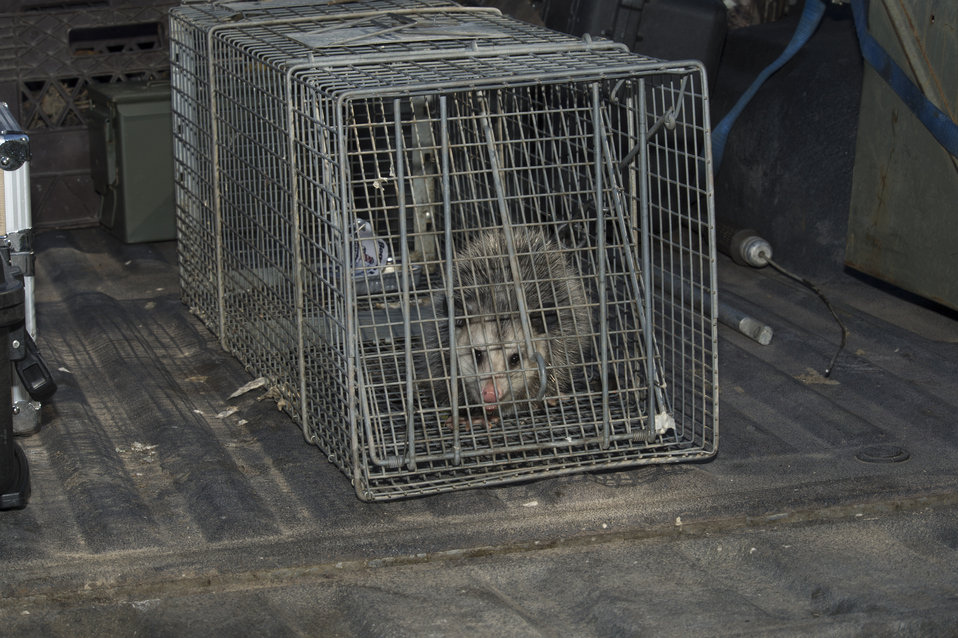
The U.S. Department of Agriculture’s (USDA) Animal and Plant Health Inspection Service (APHIS) Wildlife Services (WS) humanely captutes animals and removes the animals from the Naval Air Station Joint Reserve Base in Belle Chase, LA on Wednesday, Nov. 20, 2013. Animals that wander onto the airstrip are dangerous to aircraft on take off and landing.